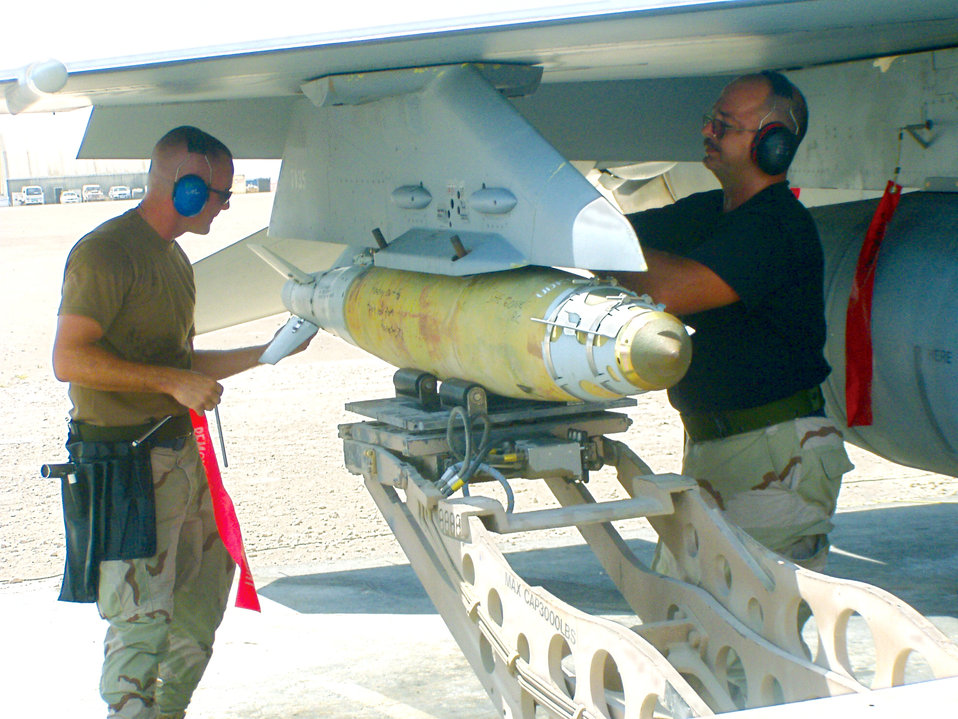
Total force uses first GBU-38 in combat

SOUTHWEST ASIA -- Senior Airman William Russell (left) and Tech. Sgt. Mark Worley detach a GBU-38 from an F-16 Fighting Falcon at a forward-deployed location. Airman Russell is a weapons loader, and Sergeant Worley is a load crew chief. They are from the Alabama Air National Guard.